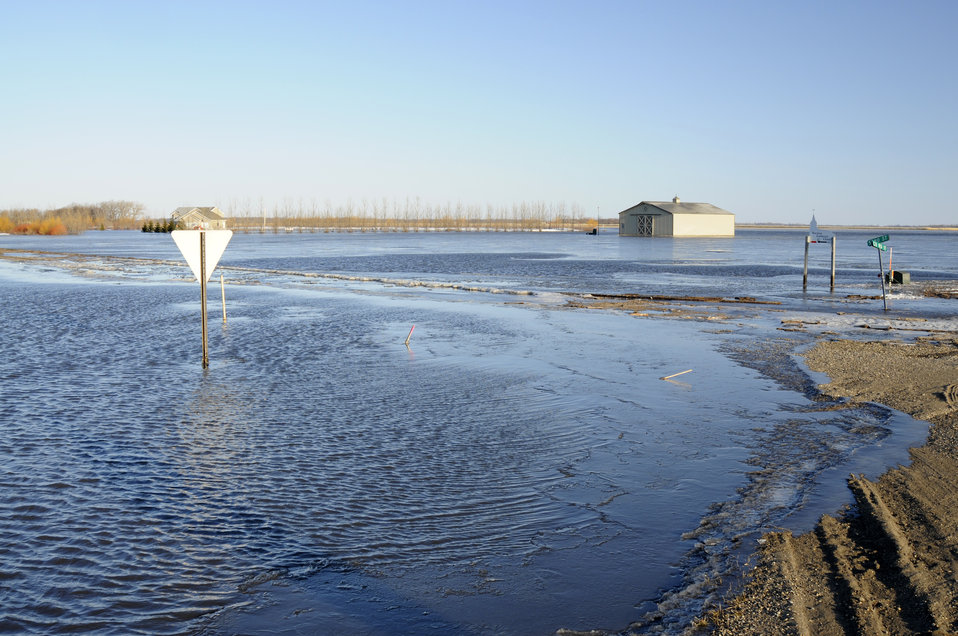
Farmland was under water in North Dakota on April 8, 2009 due to the Red and Missouri Rivers overflowing their banks. North Dakota received abnormally heavy winter snows atop saturated and frozen ground, which was already saturated when it froze at the beginning of winter, melting snow which could not be absorbed by the frozen ground, additional precipitation from a rain storm on March 22, 2009 and a late snowstorm at the end of the month added to the existing snowpack.